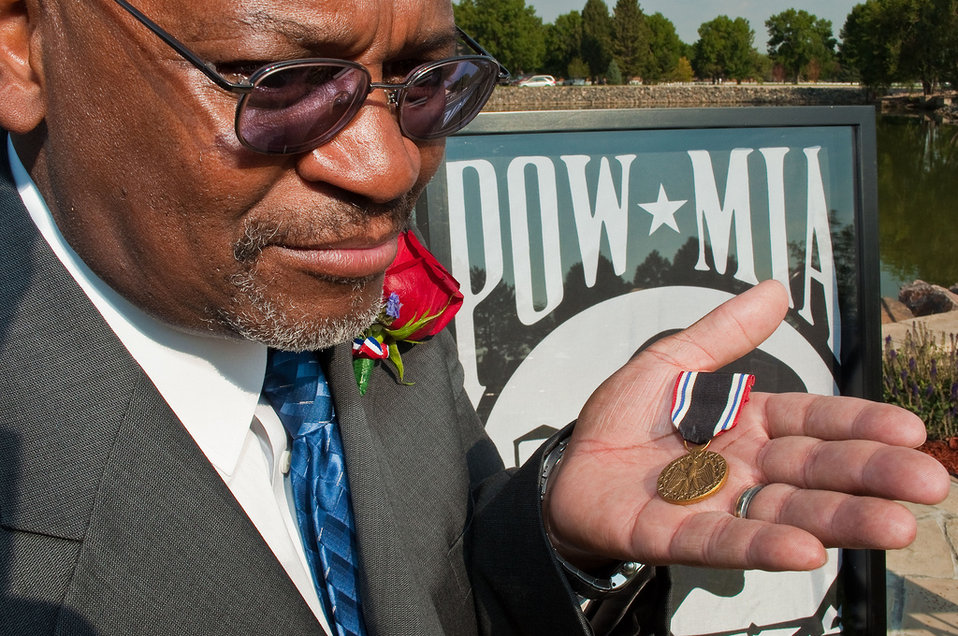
POW awarded after 32 years

Retired Air Force Master Sgt. James O’Neal Hughes with his medal after being presented with the Prisoner of War Medal at Fort Logan National Cemetery, Denver, Colo., Aug. 22, 2012. On Nov. 4, 1979, then-Staff Sgt. Hughes was taken hostage along with 65 other Americans at the U.S. Embassy in Tehran, Iran, by a group of Iranian students. The POW Medal was authorized by the Department of Defense in 1985.